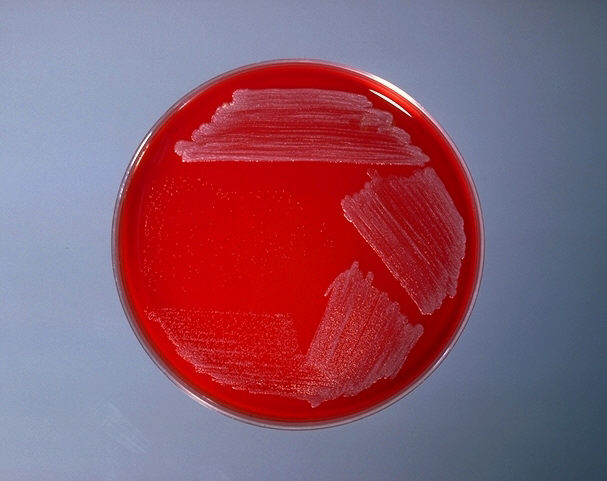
Blood agar plate culture of Corynebacterium pseudotuberculosis.